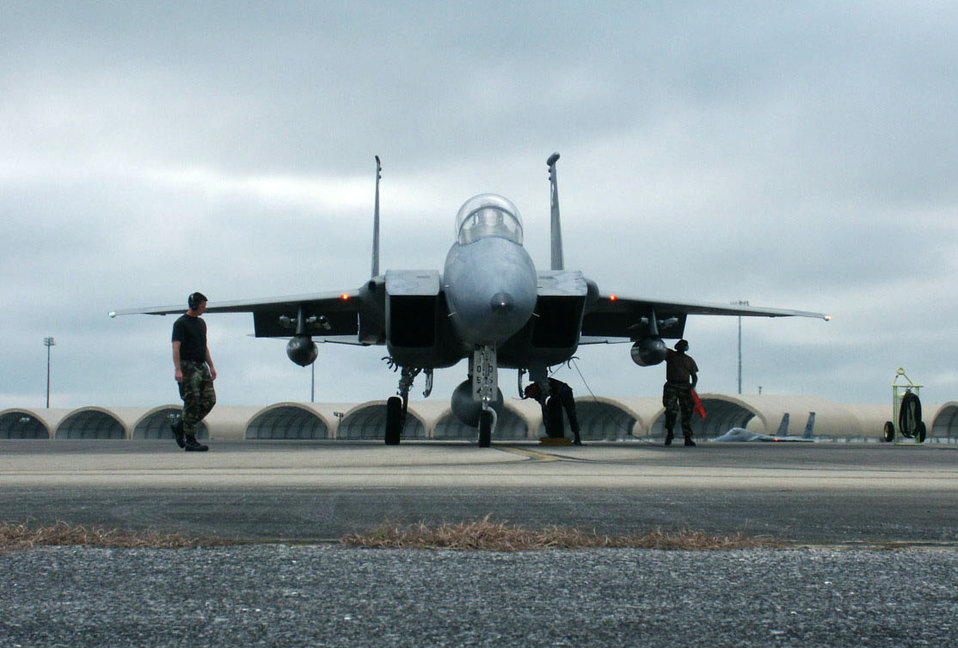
Bases, aircraft prepare for Hurricane Ivan

EGLIN AIR FORCE BASE, Fla. -- Airmen from the 33rd Aircraft Maintenance Squadron here complete final launch preparations at end of the runway early Sept. 14. About 34 F-15 Eagles assigned to the 33rd Fighter Wing are being evacuated because of Hurricane Ivan. The aircraft will be temporarily stationed elsewhere until conditions at Eglin AFB are safe.